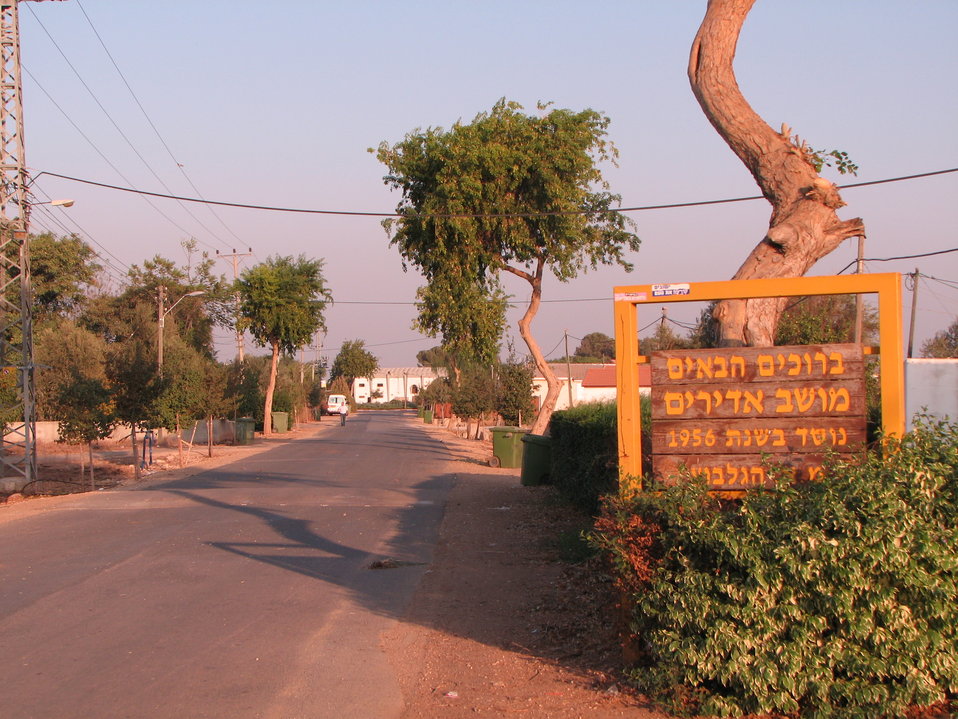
עברית: הכניסה למושב אדירים